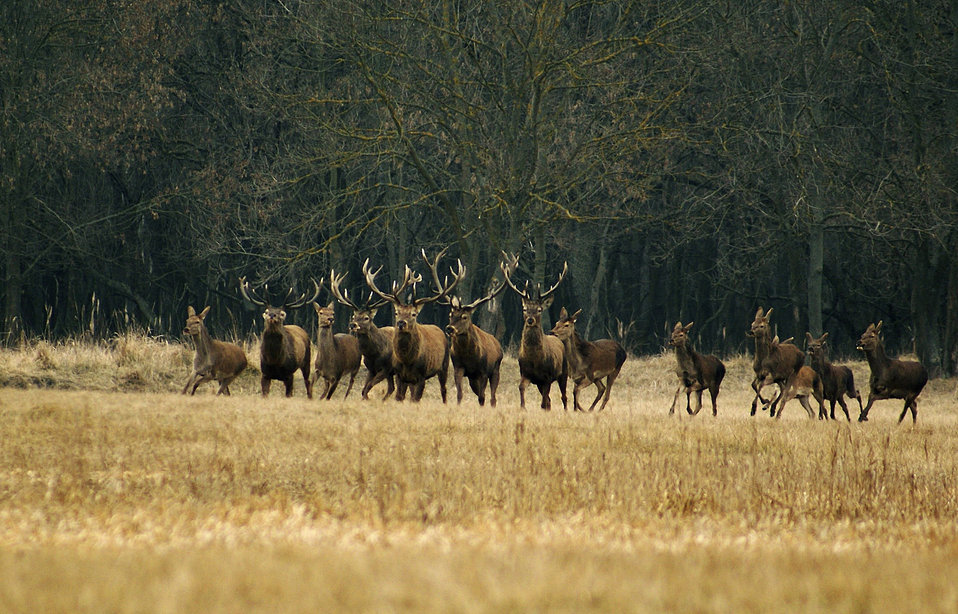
Forest deer

Red deer in the woods.